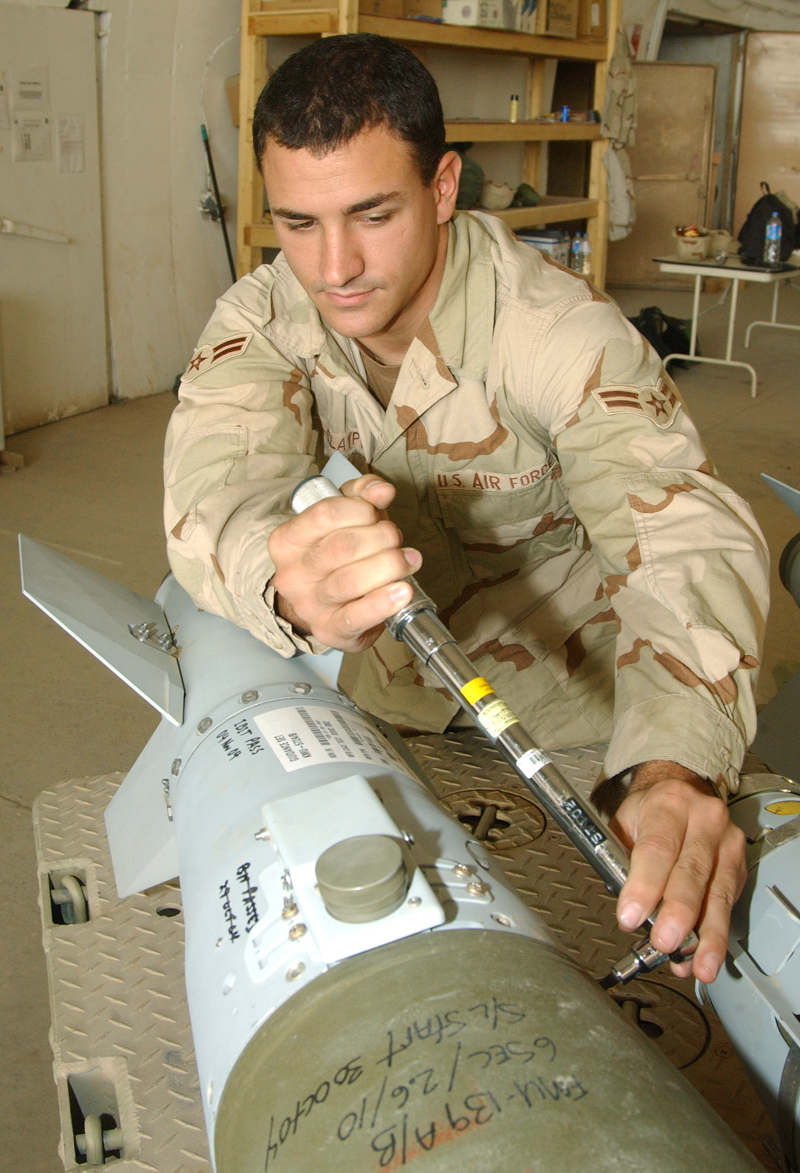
New light-weight weapon joins Balad arsenal

BALAD AIR BASE, Iraq -- Airman 1st Class Michael Claypoole assembles a GBU-38 500-pound Joint Direct Attack Munition. The new munition is designed to reduce collateral damage, limit unintended casualties and take the fight up close and personal to enemy insurgents and anti-Iraqi forces alike. Airman Claypoole is a munitions systems journeyman with the 332nd Expeditionary Maintenance Squadron here.